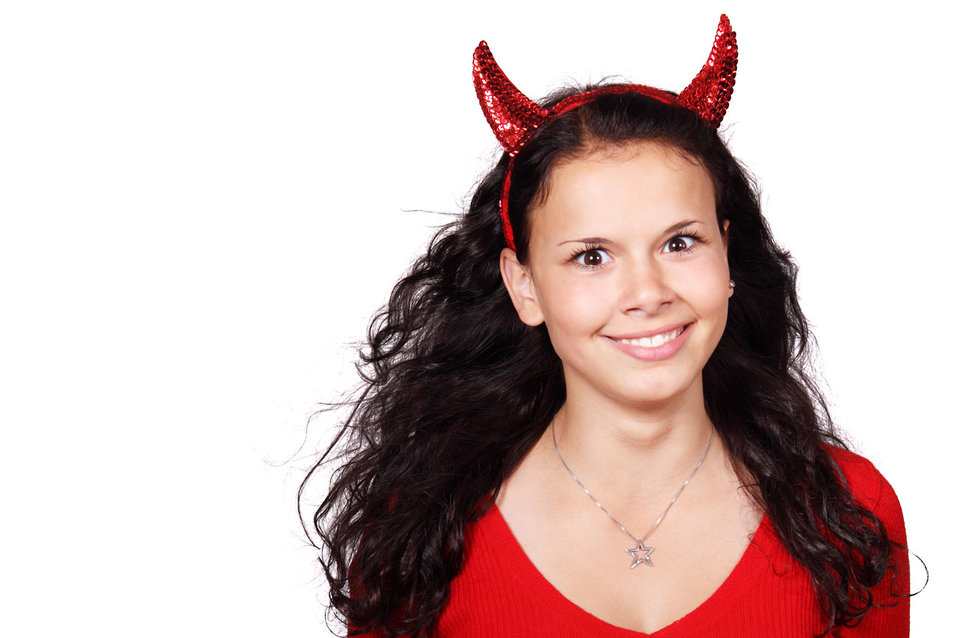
Spooky demon

Spooky female demon isolated on white background.